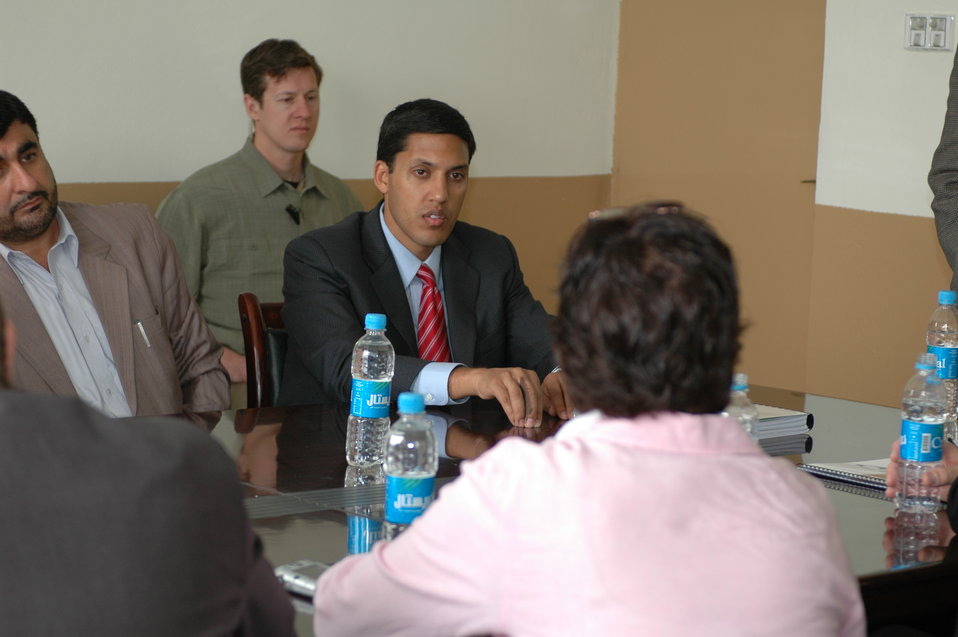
Dr Shah Visits Votech in Kabul